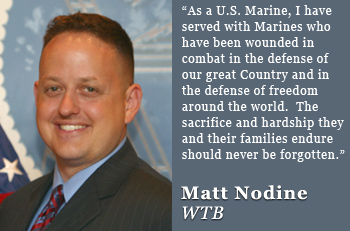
mattnodine